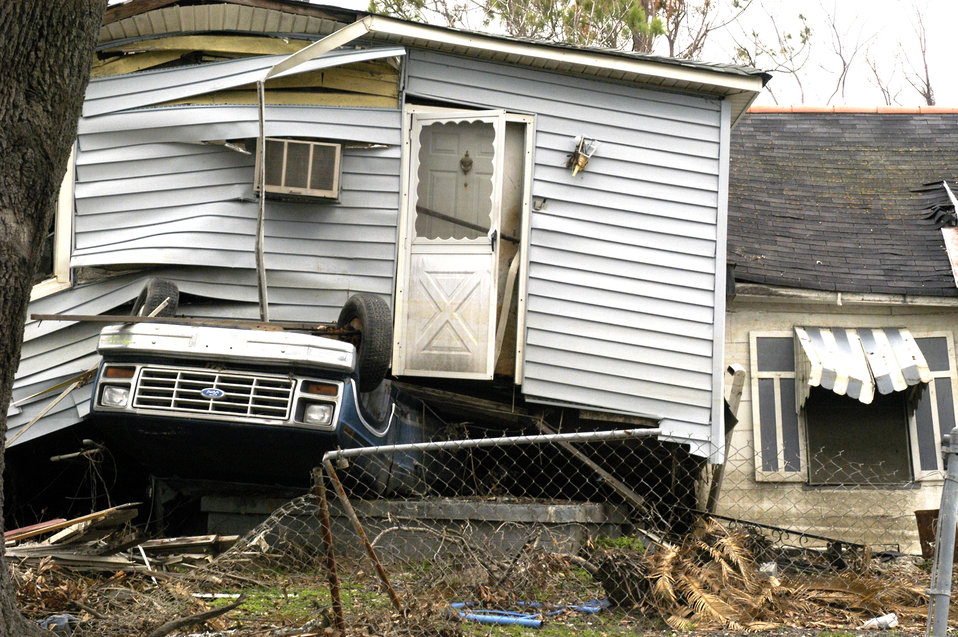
Houses were crushed and swept off their foundations by the flooding from a breached levee in the Ninth Ward, New Orleans, LA, due to the 20-foot storm surge from Hurricane Katrina that overwhelmed the flood control system. Katrina made landfall on Monday morning, August 29, 2005 as a Category 3 hurricane with sustained winds of 125/mph with over a 20-foot storm surge. Katrina caused catastrophic damage over 90 thousand square miles across Louisiana with an estimated $75 billion dollars in damage. The total economic impact to the Gulf Coast was estimated at over $150 billion. 80% of New Orleans, LA, was underwater with some areas more than 20 feet deep. Less than a month later southern Louisiana was struck by a second Category 3 hurricane Rita inflicting more damage in the southwestern areas of Louisiana adding an addition $12 billion worth of damage to the already beleaguered state. The U.S. Army Corps of Engineers (USACE) under the auspices of Federal Emergency Management Agency (FEMA) was the lead service in providing assistance to the citizens of Louisiana. The U.S. Department of Agriculture (USDA) supplied emergency food aid, emergency loan assistance to farmers and home owners, and USDA personnel from around the nation volunteered their time and muscle to aid in the recovery operations.